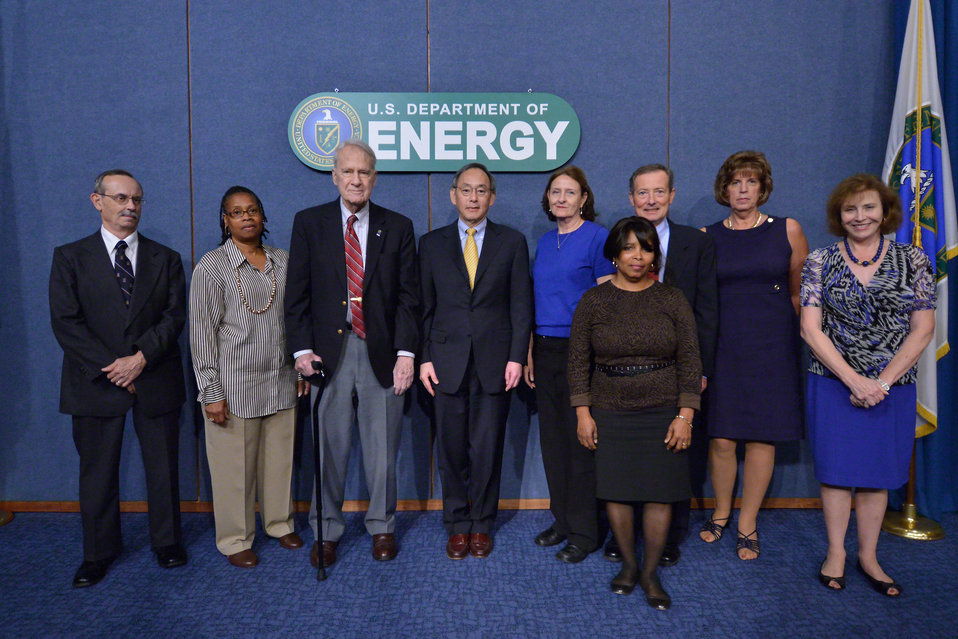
1 EIA

Charter employees from the Energy Information Administration with Secretary Steven Chu, current Secretary of Energy, and Secretary James Schlesinger, first Secretary of Energy.